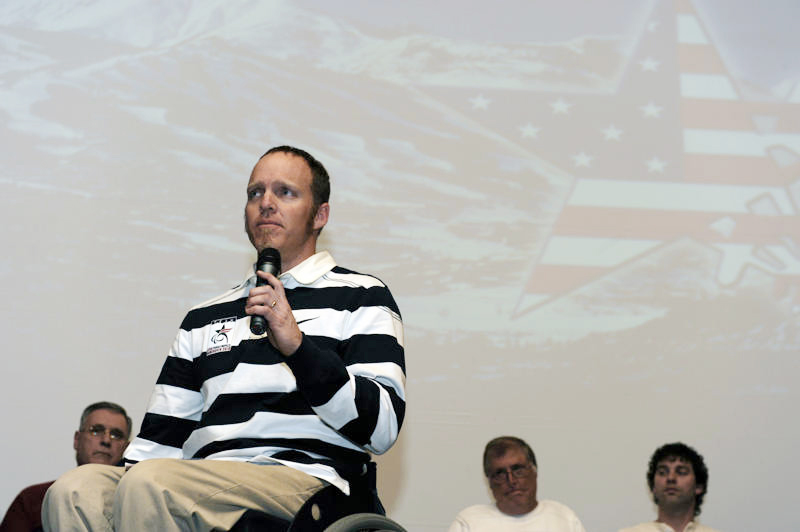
Clinic provides disabled vets pathway to paralympics

Air Force veteran Sean Halsted, who competed in the 2010 Paralympics in Vancouver, Canada, encourages his fellow disabled veterans during opening ceremonies of the 24th National Disabled American Veterans Winter Sports Clinic March 28, 2010, in Snowmass Village, Colo.